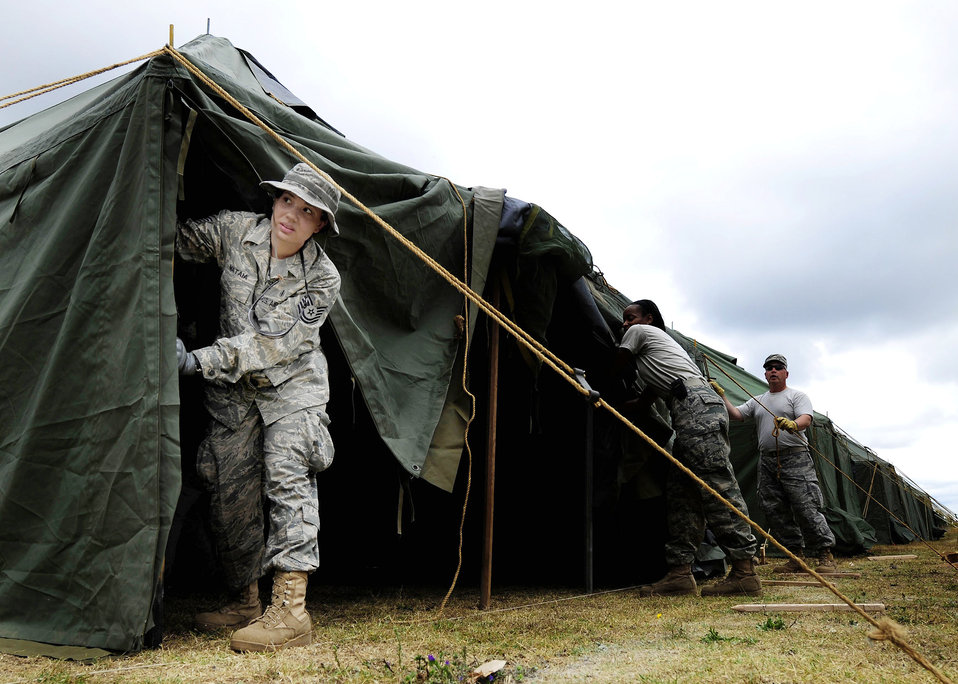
Airmen build EMEDs tents

Tech. Sgt. Nakisha Mataia supports a tent pole March 23, 2010, in Angol, Chile while building a shelter. The hospital in Angol was severely damaged in an 8.8-magnitude earthquake Feb. 27, 2010. With the loss of the regional hospital, local medical officials lost the use of 190 beds. At the request of the Chilean government officials, an Air Force Expeditionary Medical Support team deployed to Angol to build a hospital to serve the more than 110,000 people in the region. Sergeant Mataia is an aerospace medical technician assigned to the 56th Medical Group at Luke Air Force Base, Ariz.